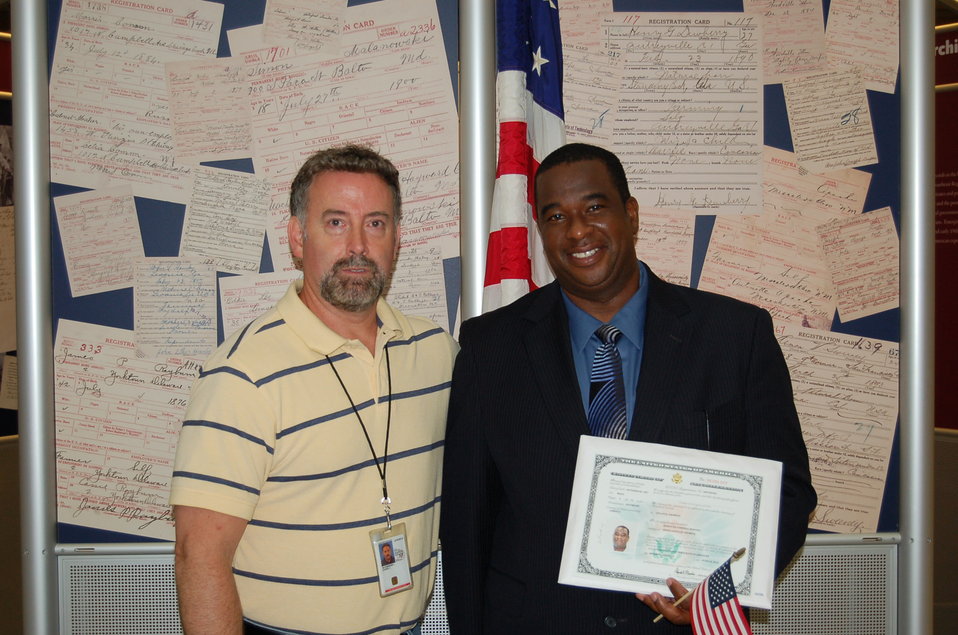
New Citizens